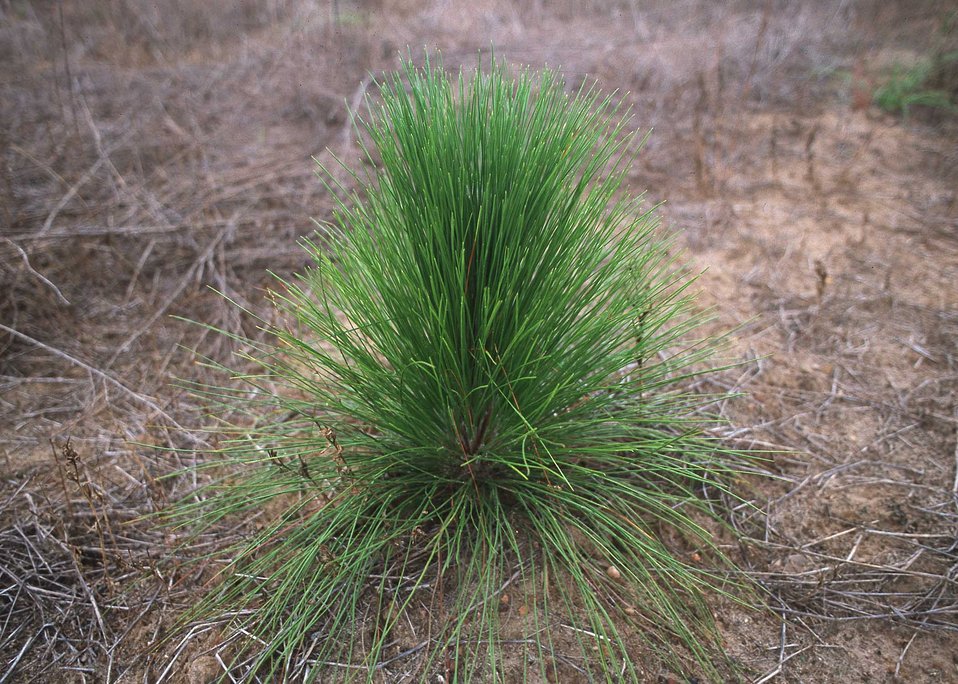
A longleaf pine after one year growth period.